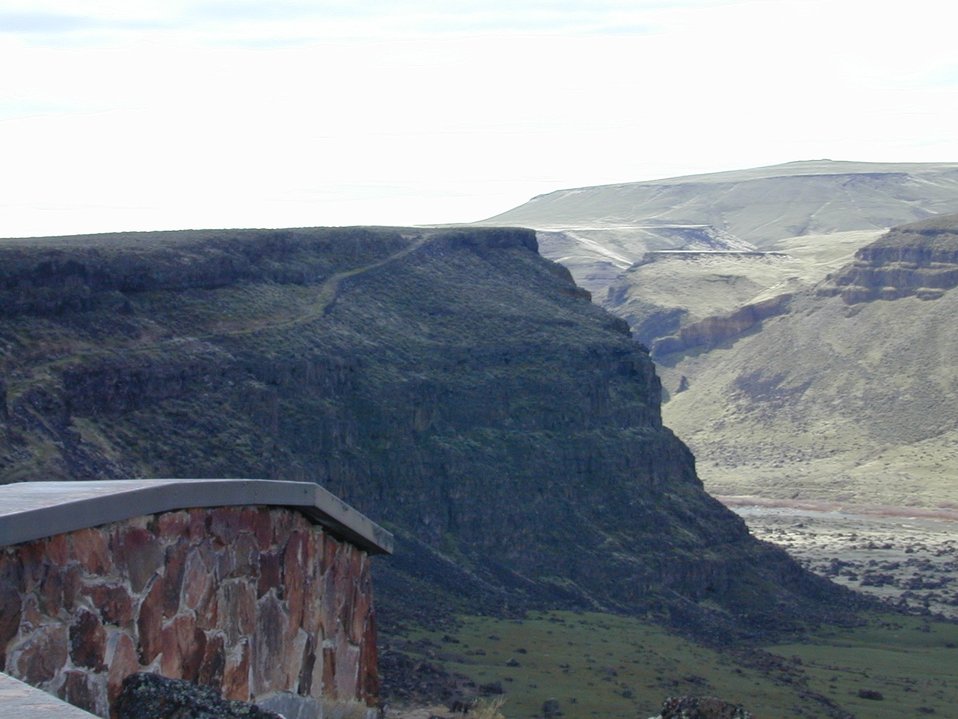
LSRD Lower Snake River District Snake River Birds of Prey National Conservation Area Snake River Canyon Scenic